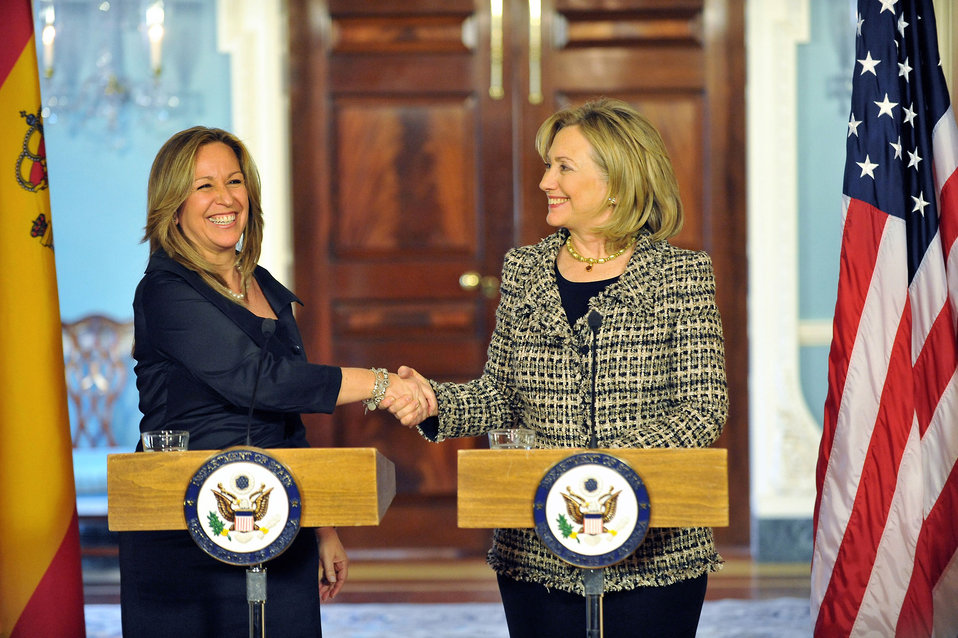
Secretary Clinton Shakes Hands With Spanish Foreign Minister Jimenez

U.S. Secretary of State Hillary Rodham Clinton and Spain's Foreign Minister Trinidad Jimenez shakes hands at the U.S. Department of State in Washington, DC, on January 25, 2011.